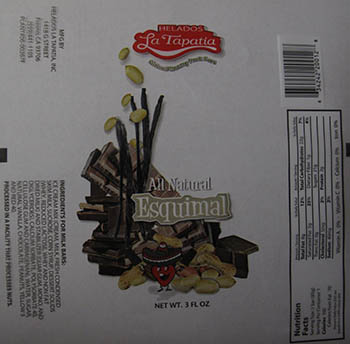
RECALLED – Ice cream products

March 19, 2014 – Product Recall – Helados La Tapatia, Inc. Recalls Products Because of Possible Health Risk.